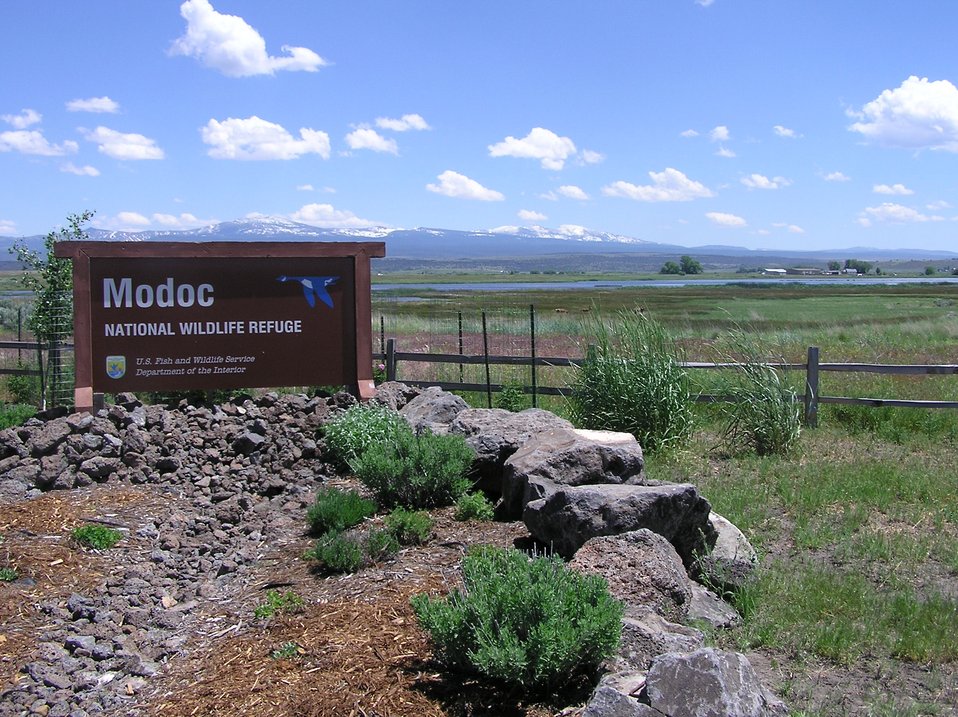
Modoc NWR

Entrance sign.